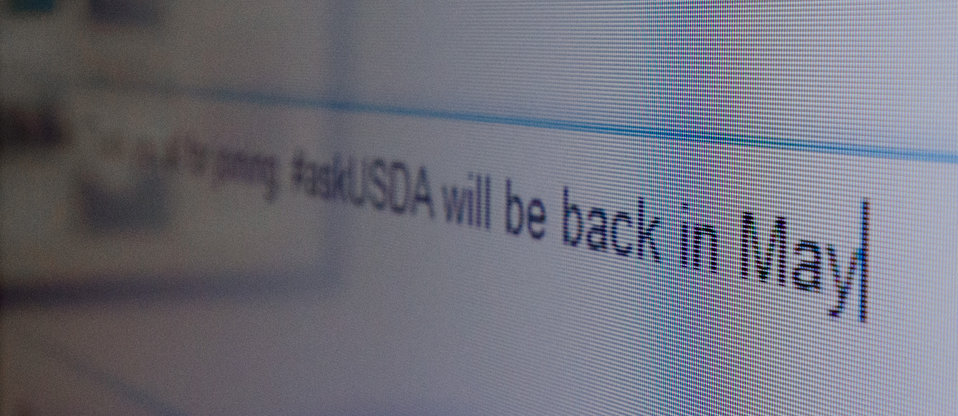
Agriculture Secretary Tom Vilsack tweets his closing message during a live 'Twitter' session held at the U.S. Department of Agriculture in Washington, D.C., on Thursday, April 4, 2012.